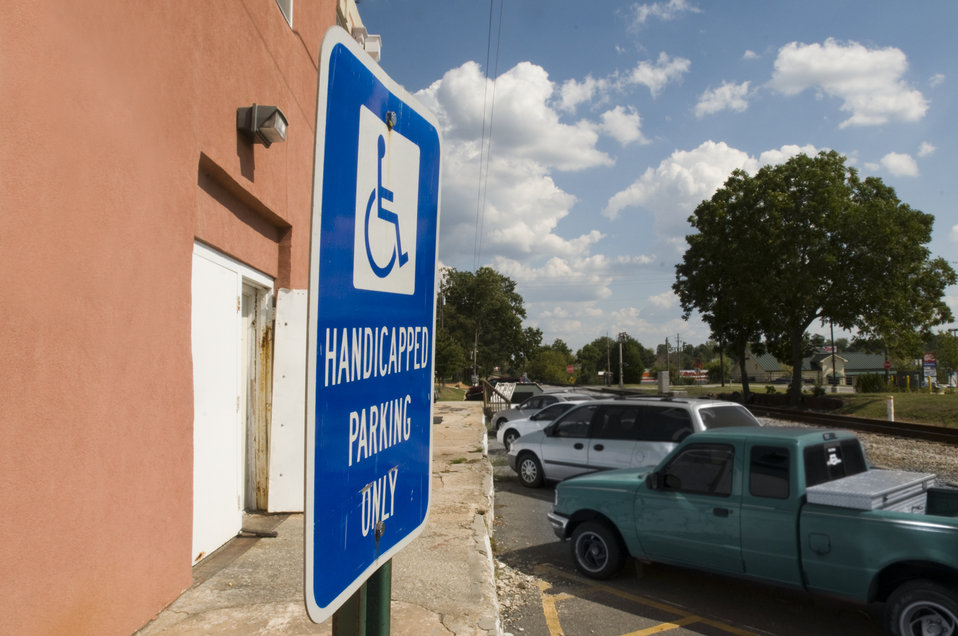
Obeying the rules of the road is paramount in the maintenance of a safe roadway for all involved, drivers, passengers, and pedestrians alike. This includes passive interaction with roadways not only in the United States, but throughout the World, as well. Merely parking an unauthorized vehicle in a designated 'Handicapped Parking Only' zone, raises the level of risk for users of a parking lot both as pedestrians, and as motor vehicle operators. Make sure to obey all road signs, and we'll all have a safer driving experience.